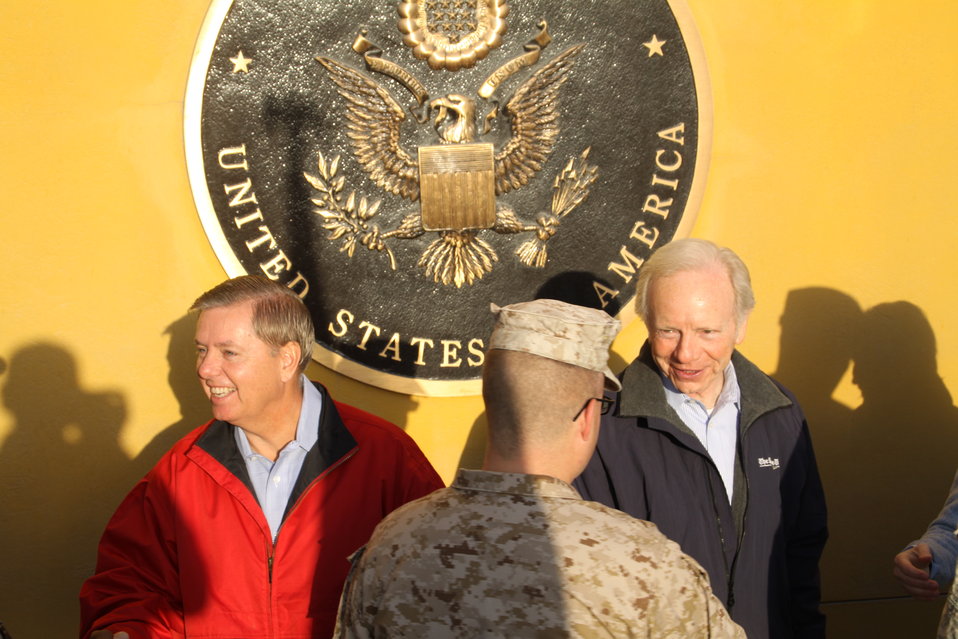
Senators Graham and Lieberman